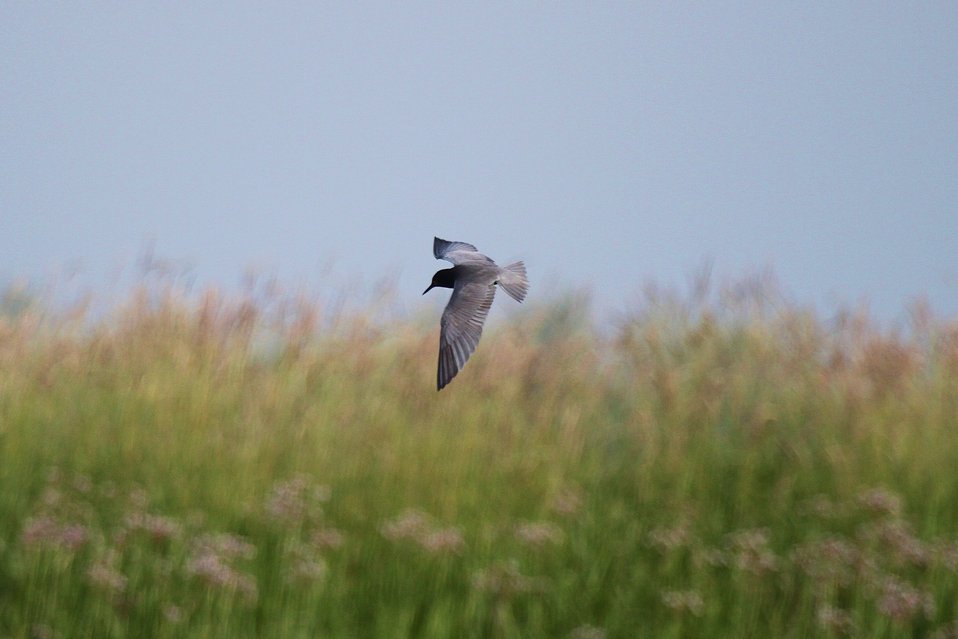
Black tern photographed at Missisquoi National Wildlife Refuge